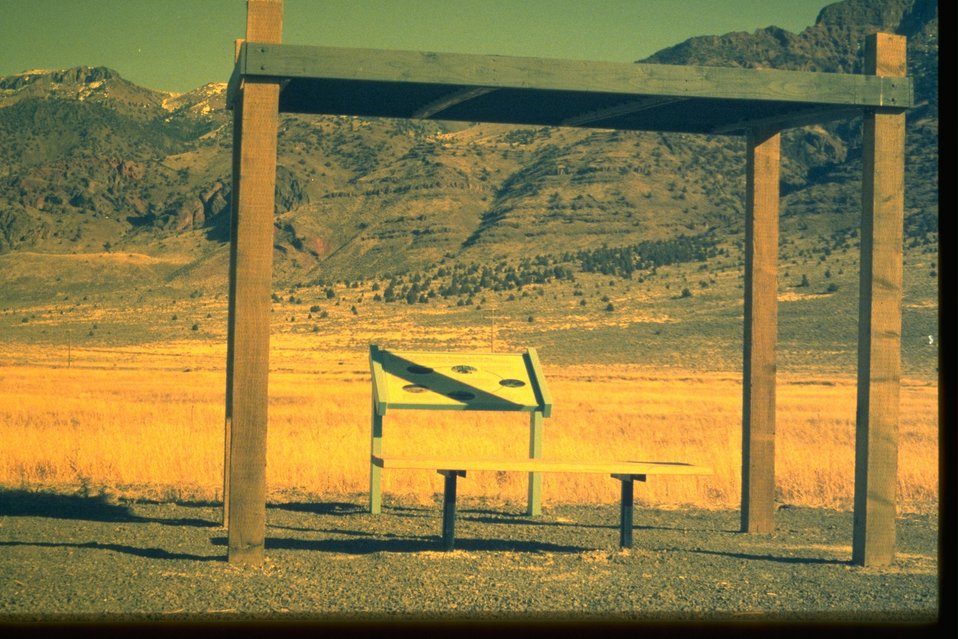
Viewing blinds, interpretive panels, and kiosks at the Warner Wetlands.